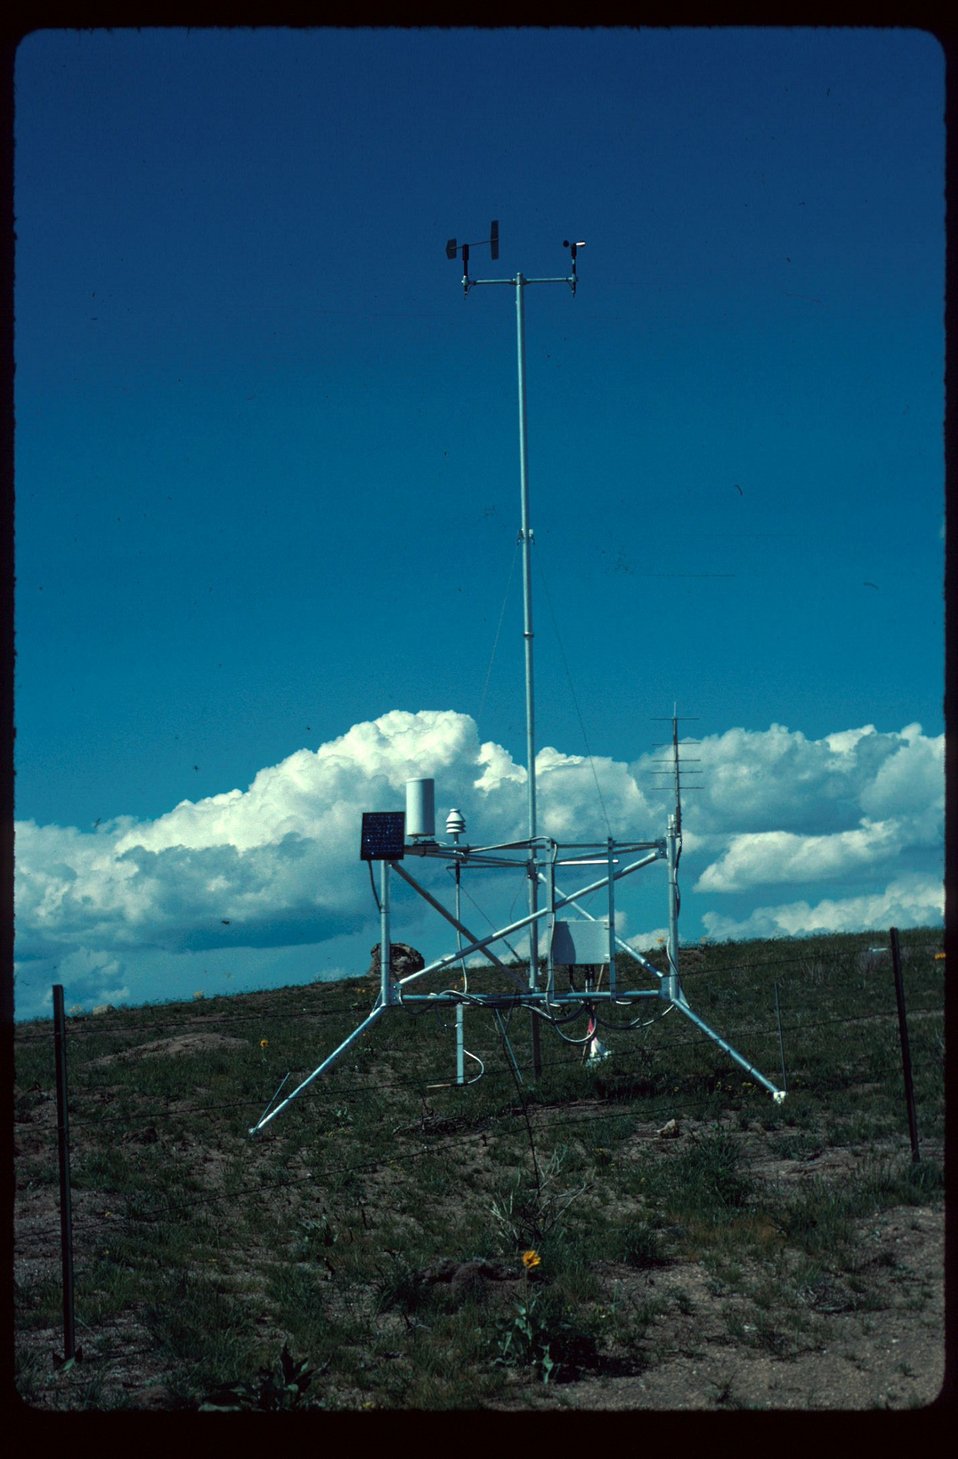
Boise Foothills Weather system Range Restoration Project